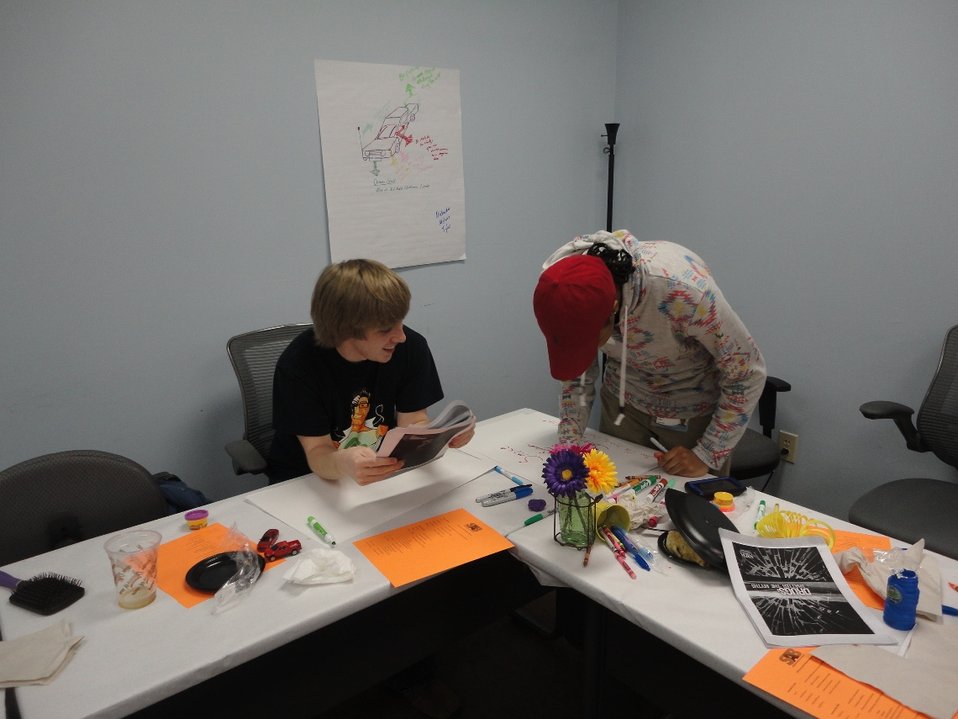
DREAM's, MS Student Advisory Board of Youth Highway Safety NDFW 2013

Mississippi High School Students participate in NDFW 2013 events.